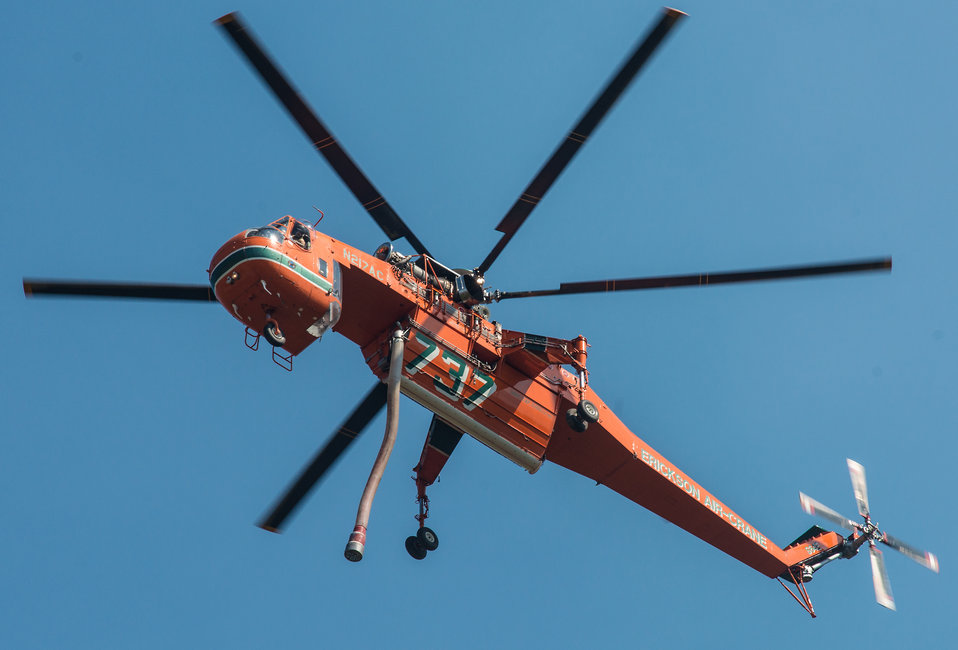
An Erickson Air-Crane's 'Helitanker 737' Skycrane climbs into the sky after using a hose pump to fill it triangular shaped tank with water from the East Fork of Baker Creek, to fight the Beaver Creek Fire, northwest of Hailey, ID, on Tuesday, Aug 20, 2013. The S-64F Aircrane Helicopter serves as a Type-1 Helitanker. The specialized aircraft is designed specifically for lifting. It's two turbine engines develop a maximum total of 9,600 SHP that turns a 72 foot main rotor, lifting a maximum hook weight of 25,000 lbs. For firefighting purposes, the designed weight of the loaded Fire Tank with water, is less than it's maximum load, to provide better flight performance in mountainous terrain.